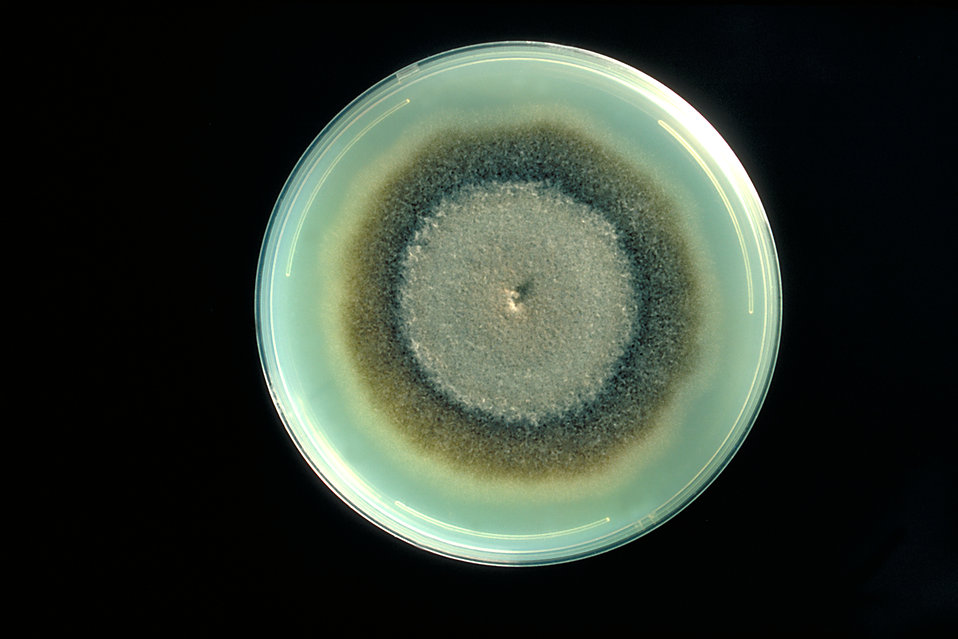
This was a plate culture of Exserohilum rostratum, a fungus, which causes Phaeohyphomycosis.